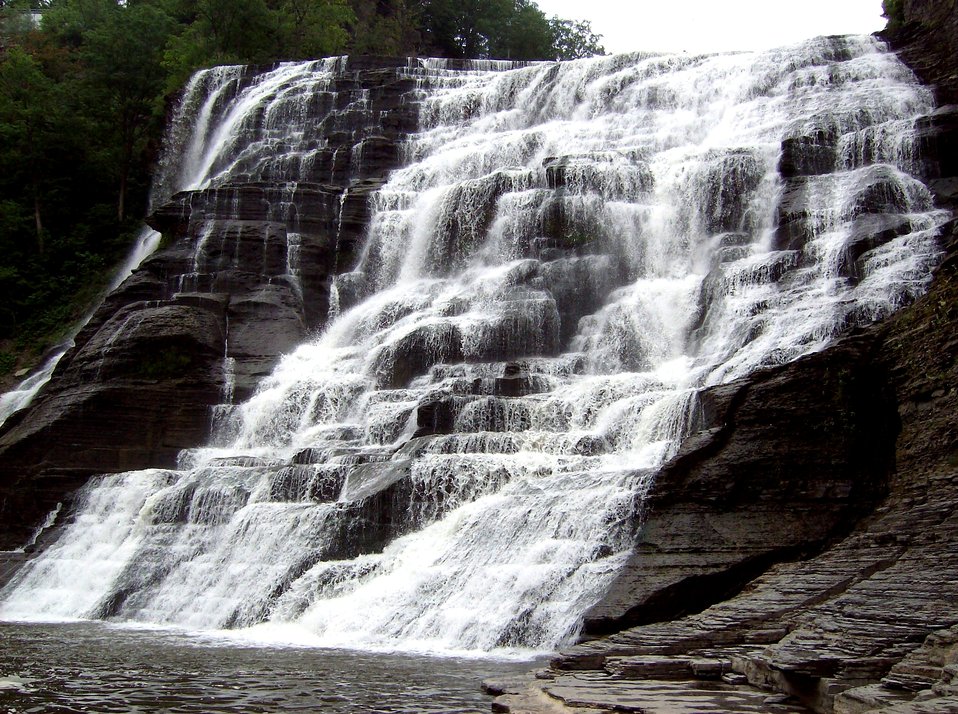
Bubbling, babbling waterfall dropping over shale formations which have eroded in stepping-stone fashion.